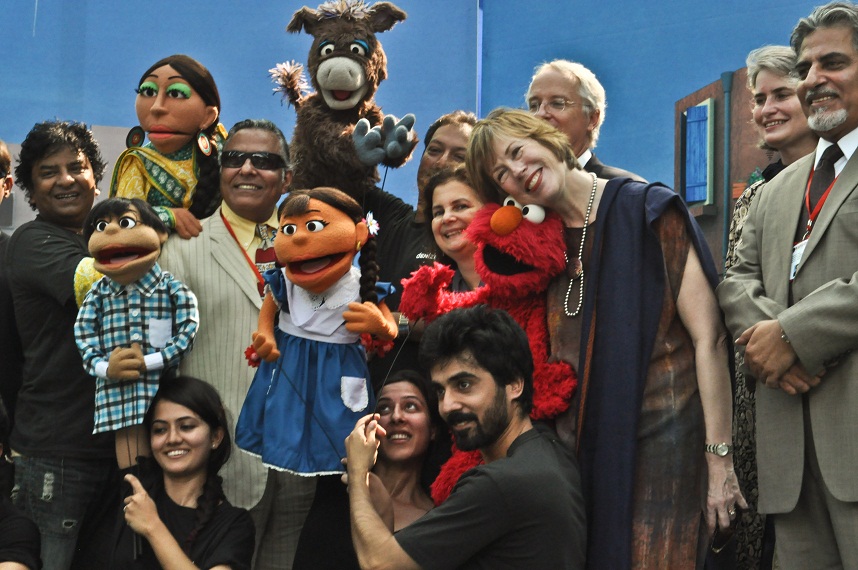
Pakistan Children Television (PCTV)

Lahore, October 5, 2011: Group photo of U.S. Ambassador Cameron Munter and his wife Dr. Marilyn Wyatt with puppeteers and PCTV team (a new USAID-sponsored Pakistani children’s TV show Sim Sim Hamara that will be launched later this year) at the Rafi Peer Theatre Workshop in Lahore.

Sim Sim Hamara is a new Pakistani puppet show that has been designed under the USAID-funded four-year, $20-million Pakistan Children Television (PCTV) Project (puppet-based television programming) for Pakistani children. The show is scheduled to go on air in late December. This take-off on Sesame Street will provide joyful learning opportunities for children in the 4-9 year age group, with a focus on disadvantaged children, especially girls who do not have access to formal schooling. Educational curriculum will focus on language development, critical thinking, and cognitive processes. The program is expected to help alleviate the educational deficits of children without access to schooling and reflect messages of inclusion, mutual respect, and equal opportunity while developing basic literacy and numeracy skills.

In addition to the television show, the USAID-funded project will include: radio programs for parents and other caregivers, live puppet shows, mobile video shows, a website with e-books, games, and children’s songs.